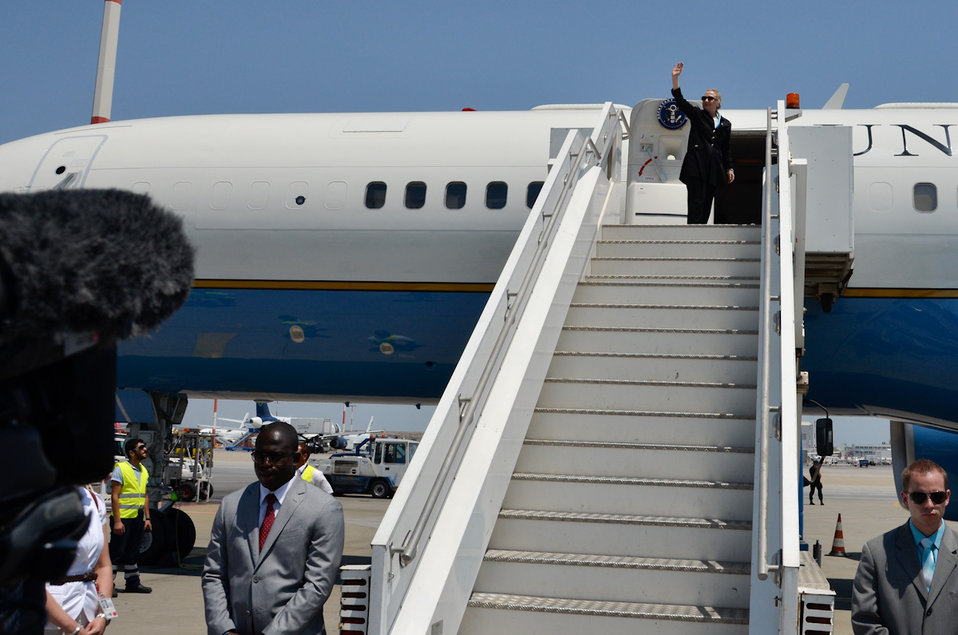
Secretary Clinton Waves Goodbye to Athens, Greece

U.S. Secretary of State Hillary Rodham Clinton waves goodbye to Athens, Greece, before heading to New Delhi, India, on July 18, 2011.